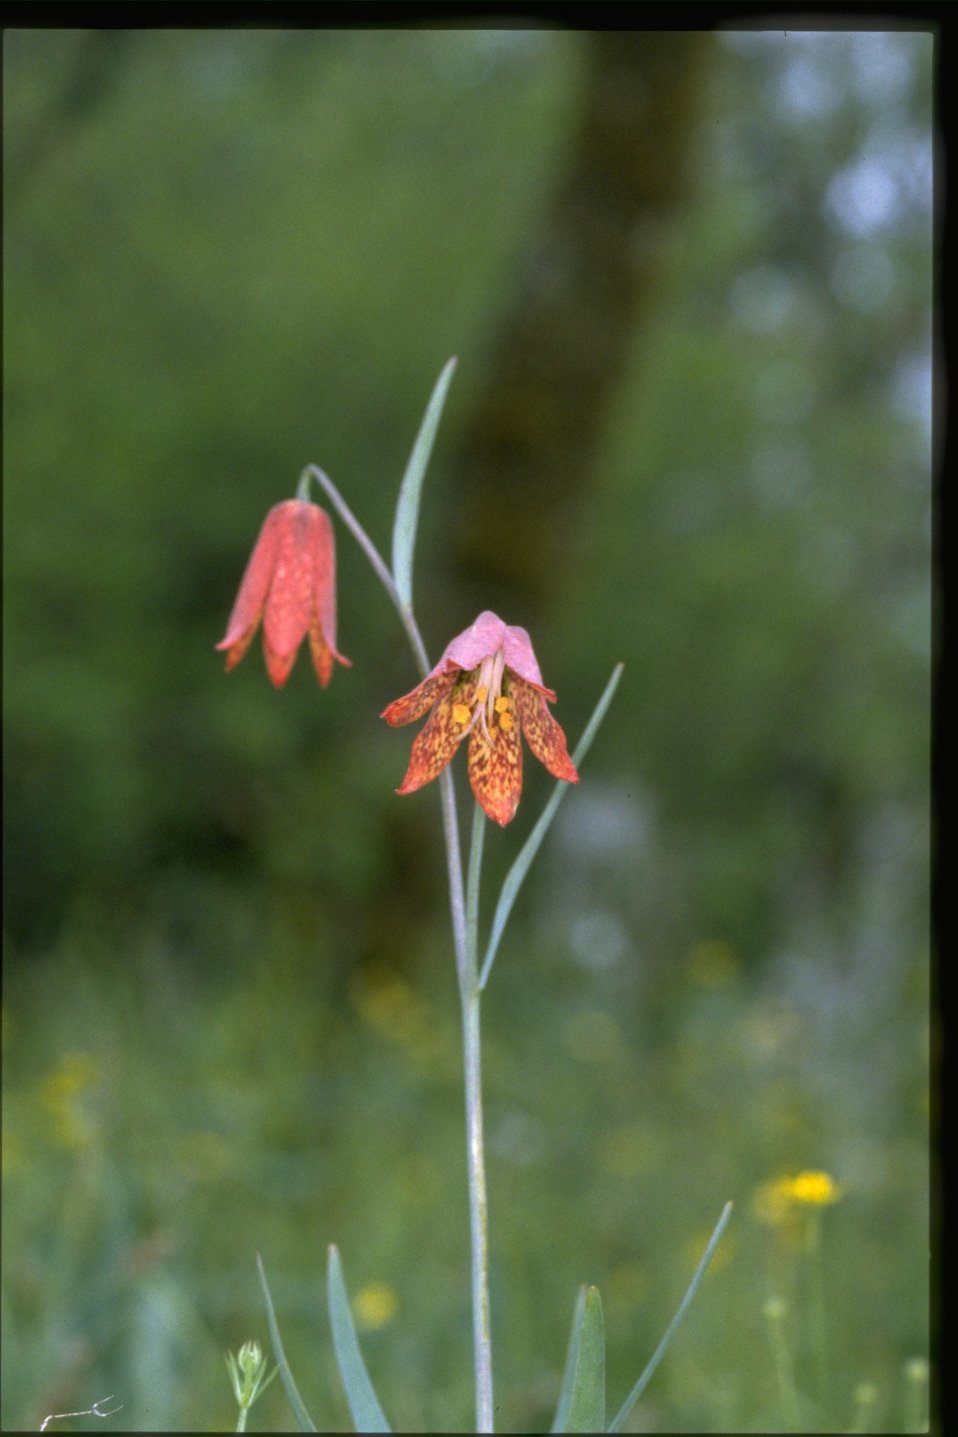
Medium shot of Gentner's Fritillary, Fritillaria gentneri.